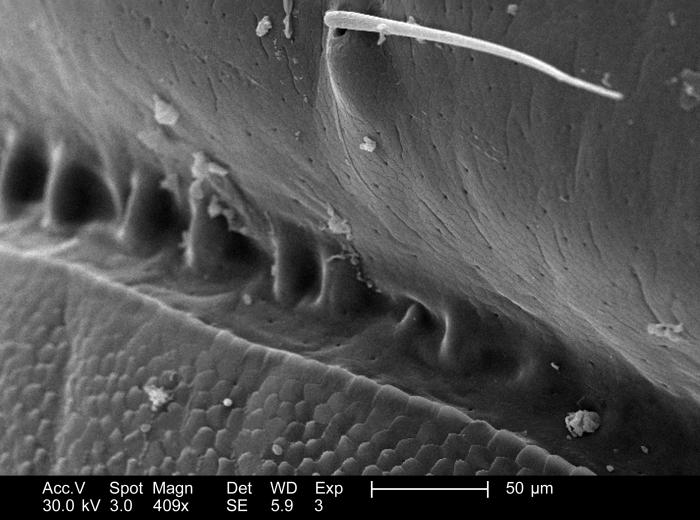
Magnified 409x, this scanning electron micrograph (SEM) depicted the many variations in patterns displayed on the chitinous exoskeletal surface of this millipede that had been found deceased on the ground in the Decatur, Georgia suburbs.